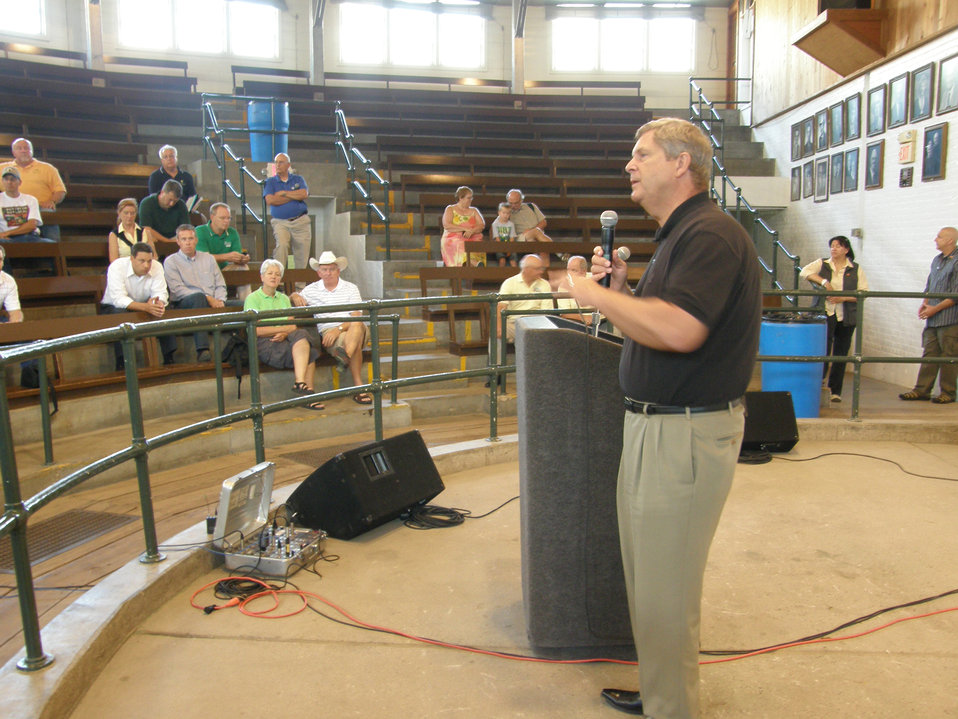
Agriculture Secretary Tom Vilsack hosted a White House Rural Forum at the Iowa State Fair in Des Moines, IA on Friday, Aug. 19, 2011. As chair of the White House Rural Council, Secretary Vilsack is working to coordinate Agriculture programs across the government and encourage public-private partnerships to improve economic conditions and create jobs in rural communities. The White House Rural Forums provide an opportunity for government leaders to hear directly from rural residents from around the country about their ideas on how to grow the economy.